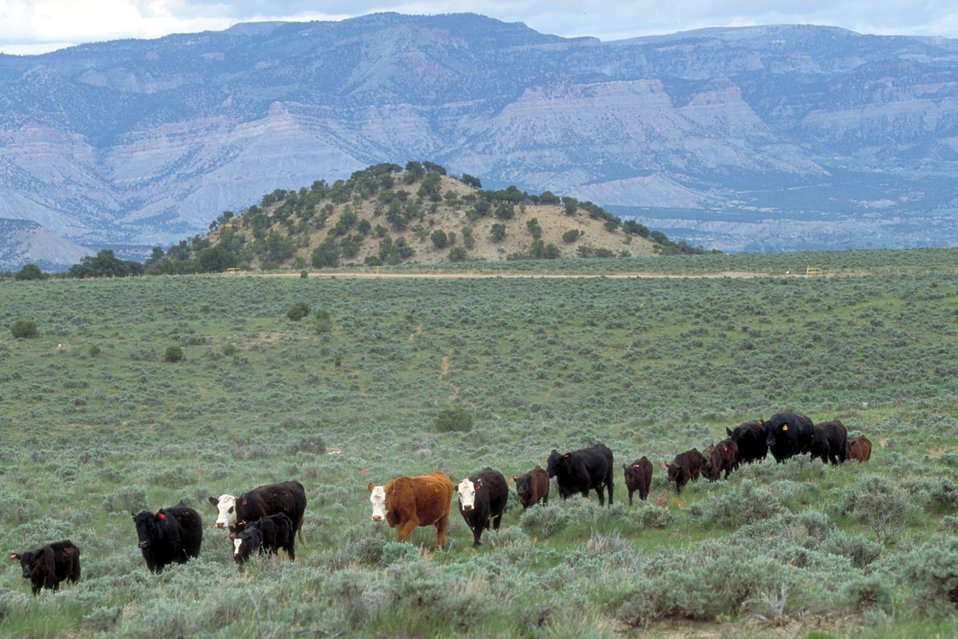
Livestock grazing on BLM lands near Price, Utah.